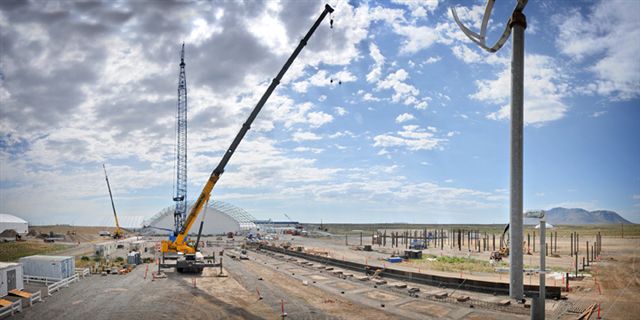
RAN ARP RWMC S123 ARP VIandVII PANORAMA 072610 P6558-062 A